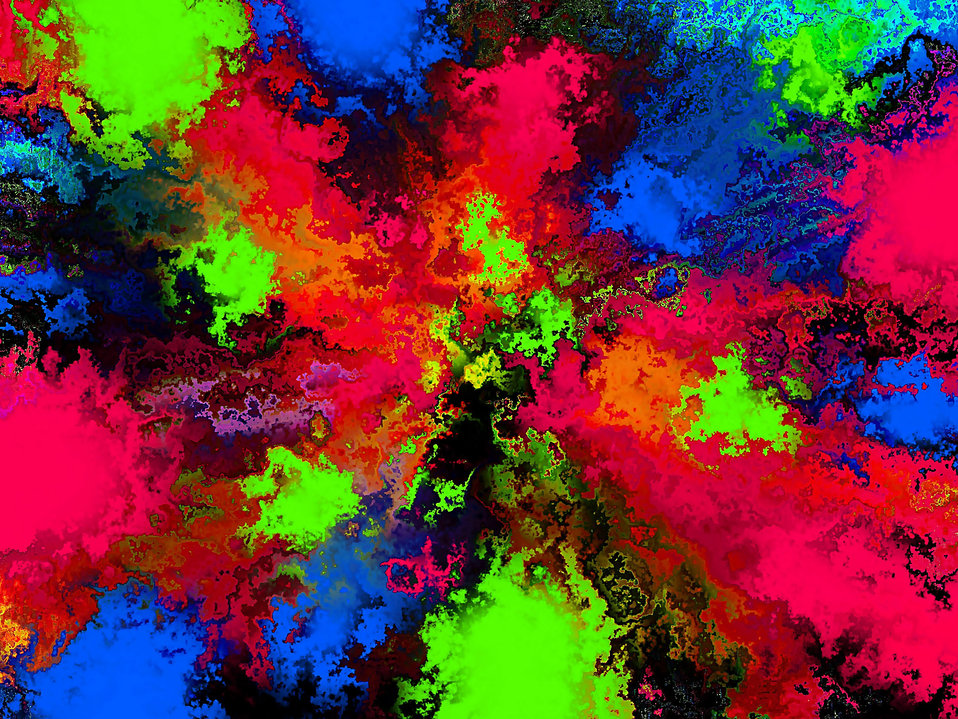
Coarse colored structure

Background.